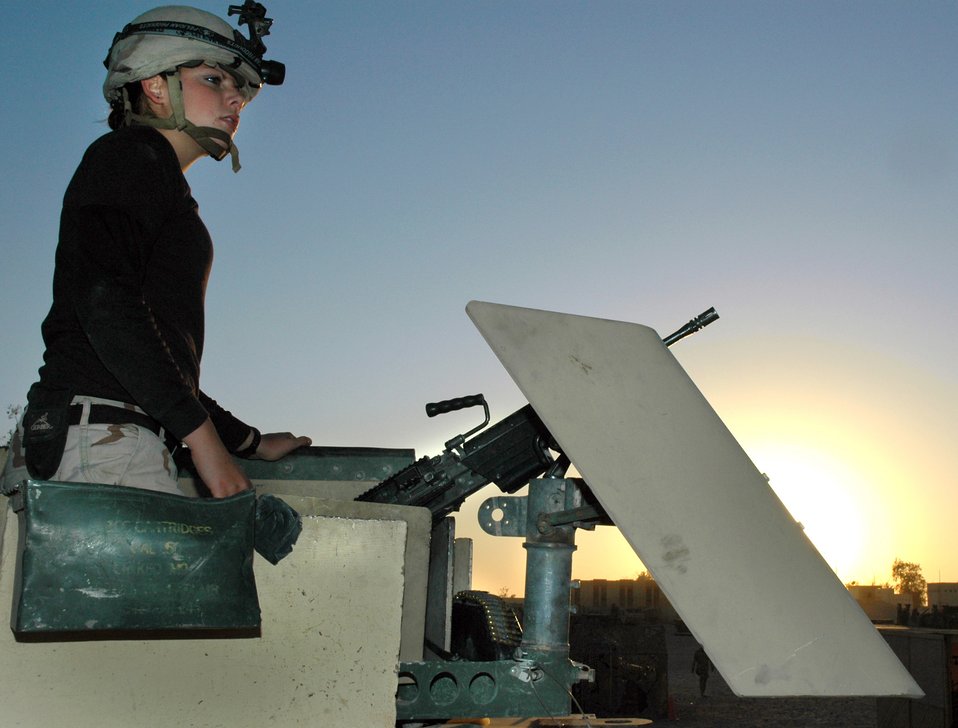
Air Force gun trucks deliver goods

TIKRIT, Iraq (AFPN) -- Airman Catherine Karl prepares for a night convoy from base Speicher. Airmen with the 732nd Expeditionary Logistics Readiness Squadron here provide armed escort of combat patrols to ensure passengers and cargo reach their destinations throughout Iraq. Airman Karl deployed from Royal Air Force Mildenhall, England.